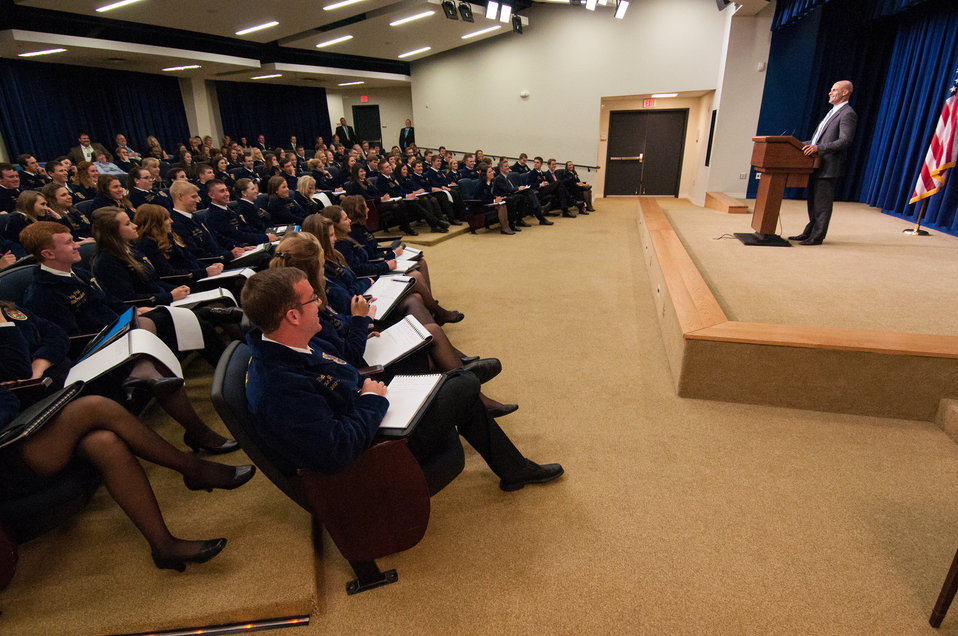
White House Chef Sam Kass speaks at a meeting of the White House Rural Council to an audience of the National State President’s Conference of the FFA on Wednesday, Jul. 24, 2013 in Washington, D.C. Chef Kass discussed nutrition and agriculture topics.